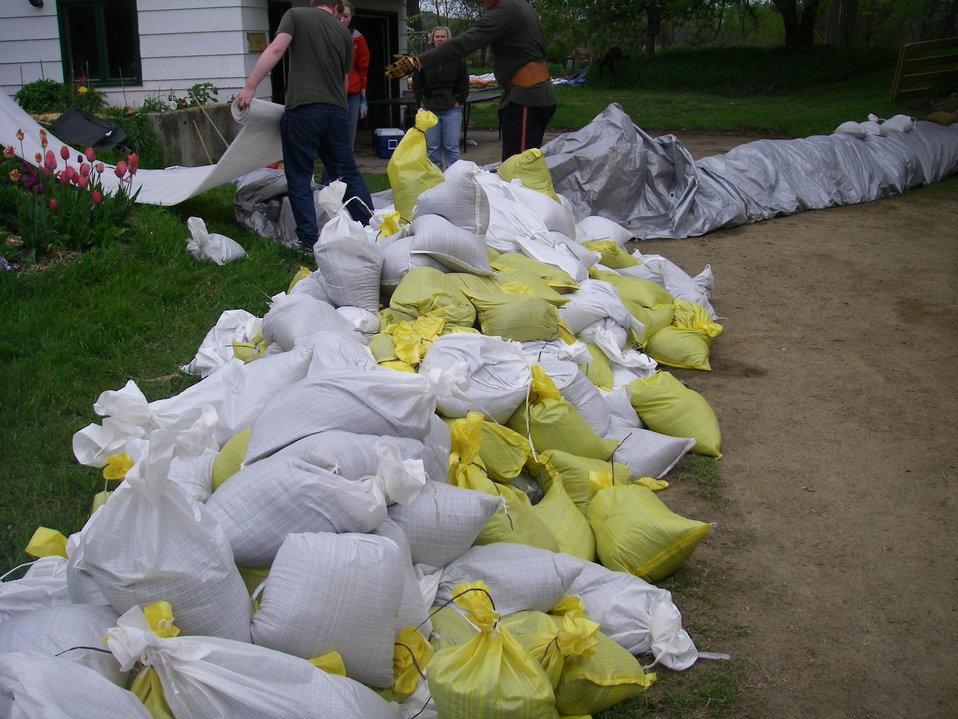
Volunteers Build a Barricade

As the Missouri river continues to rise, the U.S. Fish and Wildlife Service and other partners volunteer to fill sand bags and build a barricade and take other preemptive measures to protect lives and property below Garrison Dam in the Bismarck/Mandan area in North Dakota. With planned releases from the dam expected to nearly double the river’s flow in the next two weeks, more flooding is expected.